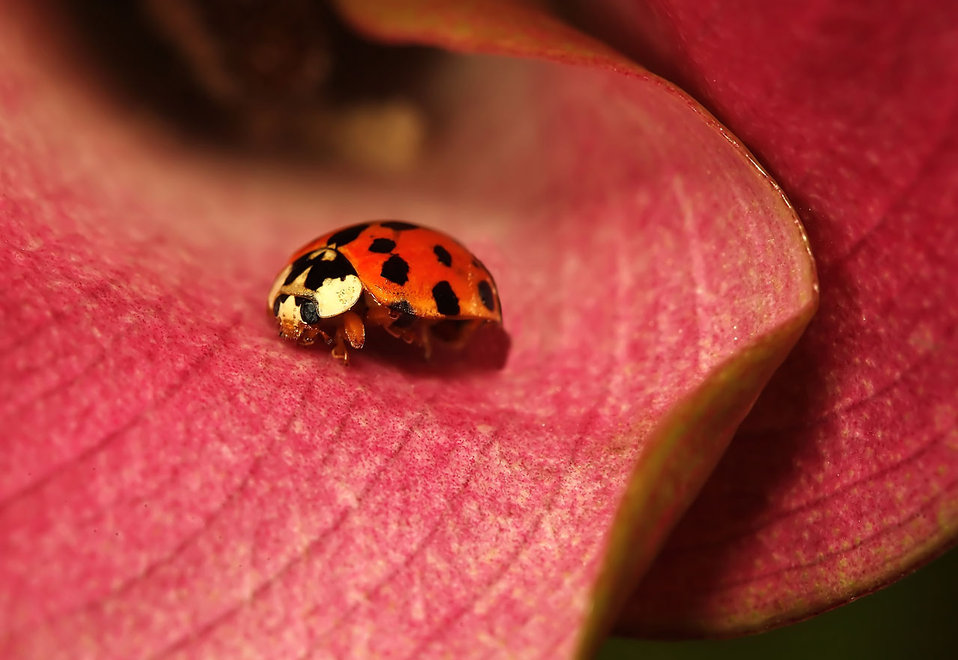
Lady bug

Ladybird on a calla flower..